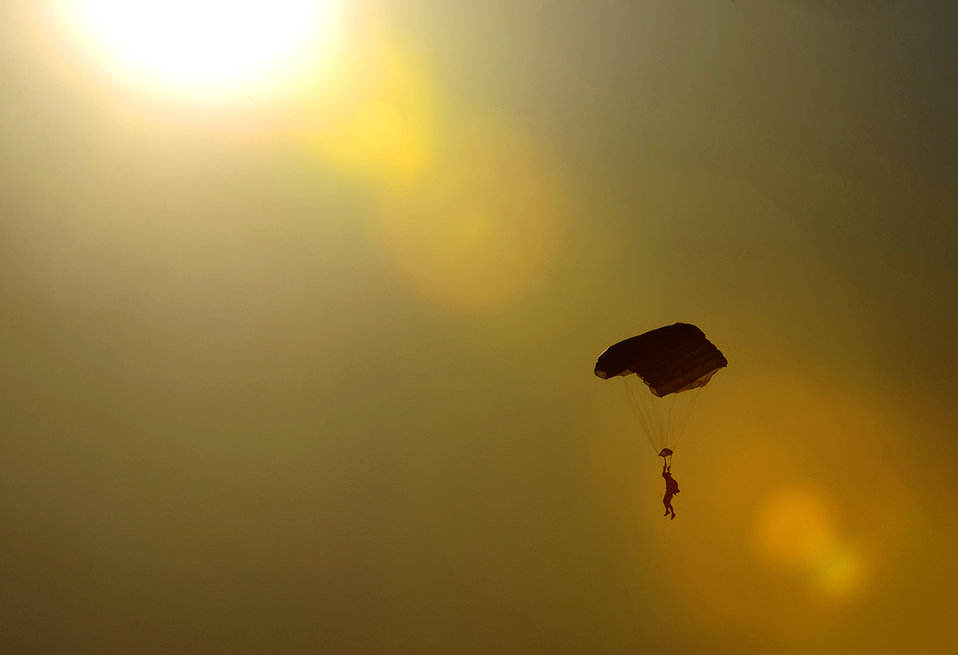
Joint training at 12,500 feet

A Navy SEAL drifts to the ground after jumping from a C-17 Globemaster III April 15, 2010, over Fort Picket Maneuver Training Center, Va. The jump was part of joint training exercise with 517th Airlift Squadron members from Elmendorf Air Force Base, Alaska.